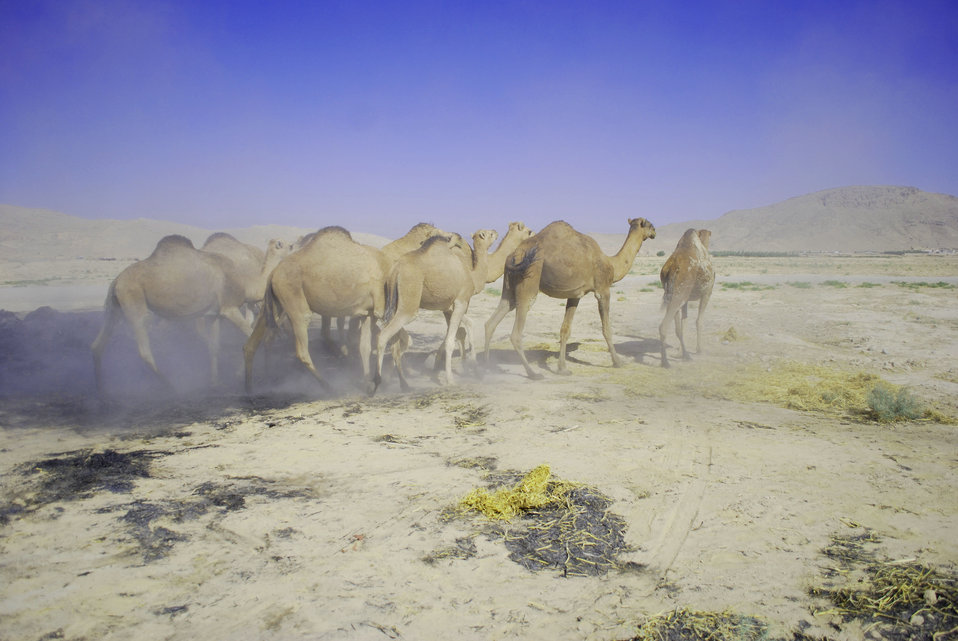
'On the Road' in Kandahar